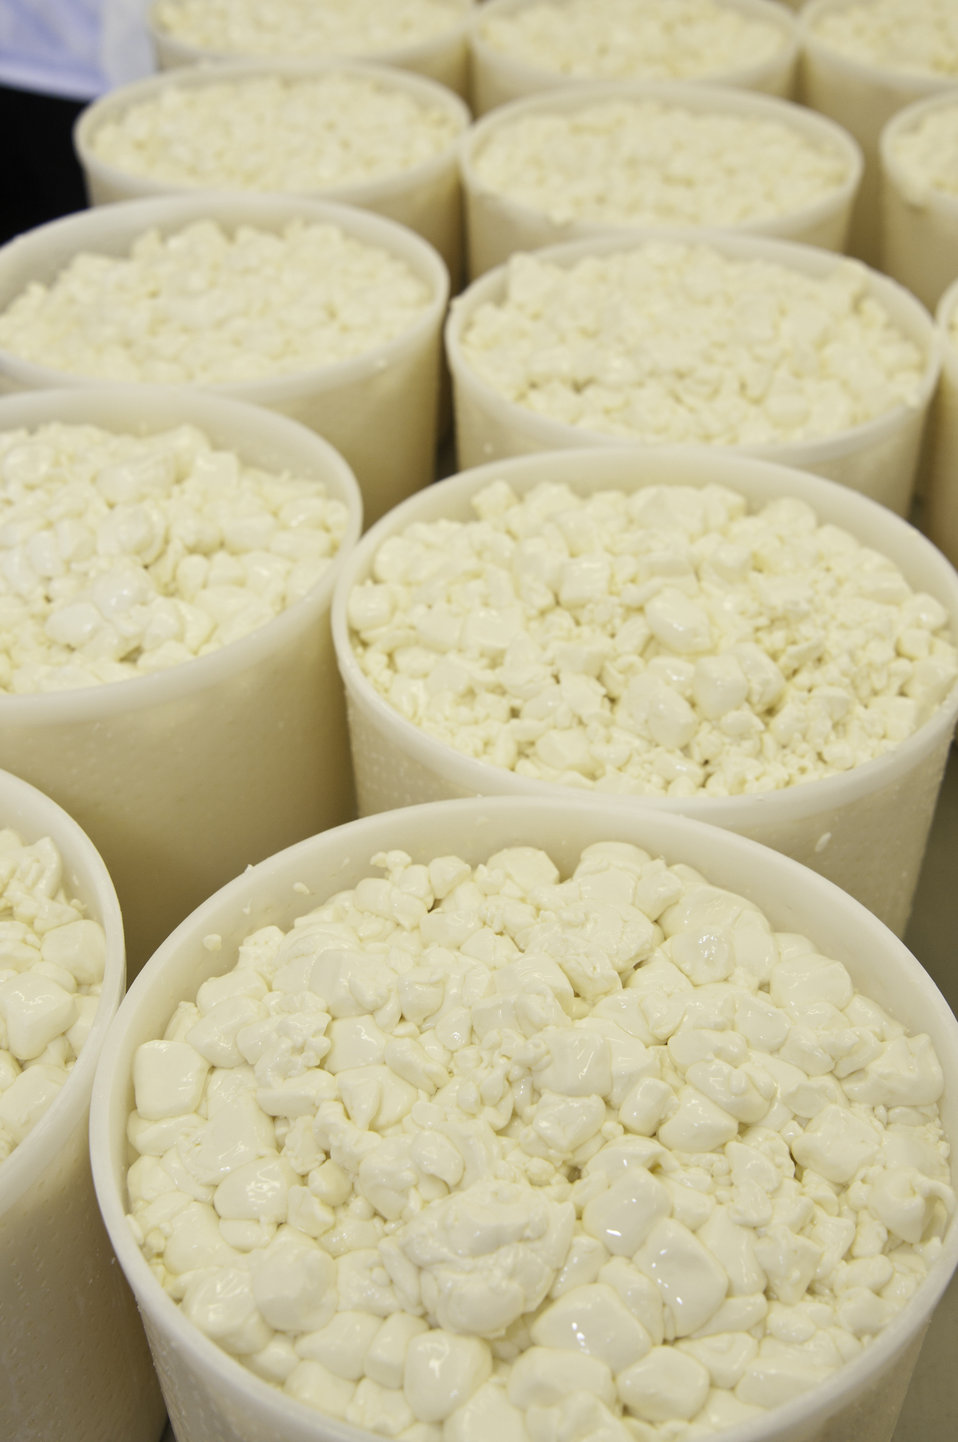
Milk curd in the hooping process at Chapel’s Country Creamery in Easton, MD, the curd will drain in the cheese hoops for 24 hours being turned during the process until the whey has drained. The cheese is then aged 60 days or longer. The dairy’s Chapelle, Talbot Reserve and Bay Blue are placed in a climate-controlled cave, which gives the cheese its unique flavor. The cave-aged cheeses develop their own natural rind.